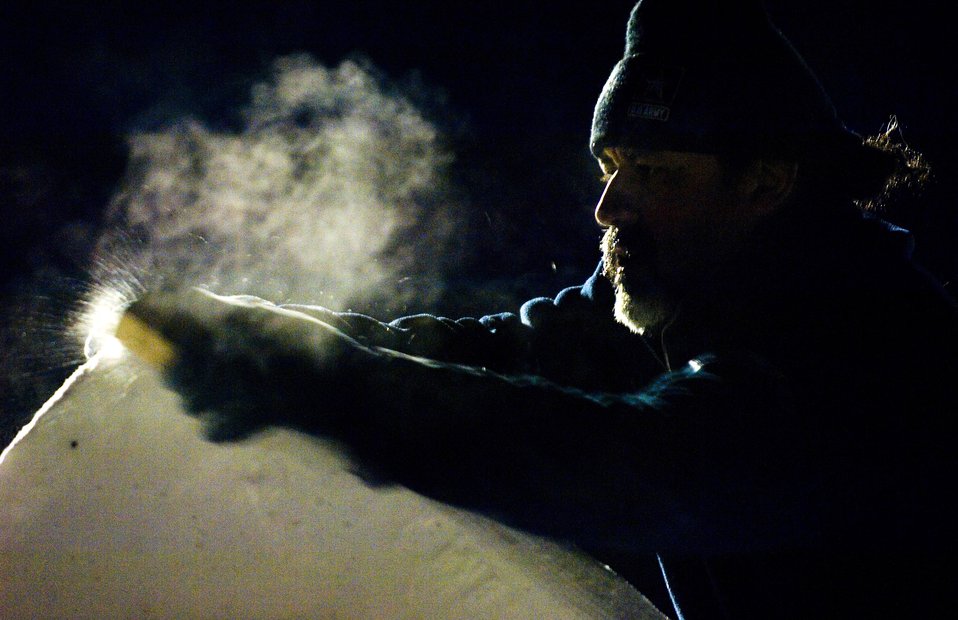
Elmendorf team perfects snow sculpting skills

Mitchell Manzo, a member of the three-man Elmendorf Air Force Base snow-sculpting team, carefully sculpts a dragon's head on the prow of a pirate ship Feb. 23 during the Anchorage, Alaska, Fur Rendezvous snow sculpture competition. The team was vying for a chance to be invited to the 2008 National Snow Sculpting Championship in Lake Geneva, Wis. Mr. Manzo is a chef with the 3rd Services Squadron.